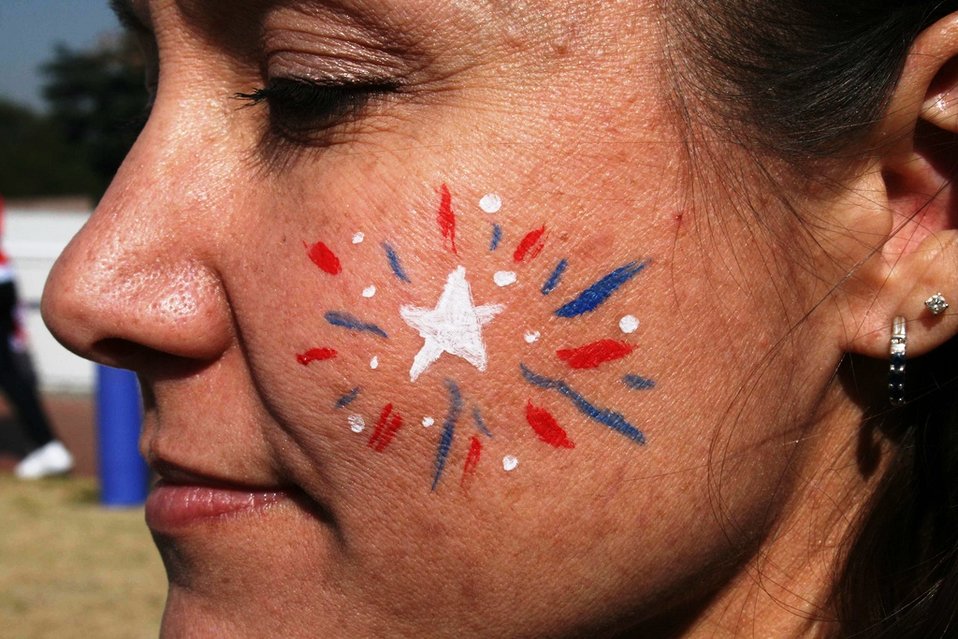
A Fan Shows Her Team Spirit With Face Paint

A fan shows her team spirit with a red, white, and blue face-painted design at the Team USA pep rally before the U.S. vs. Algeria World Cup match on June 23, 2010, in Pretoria, South Africa.